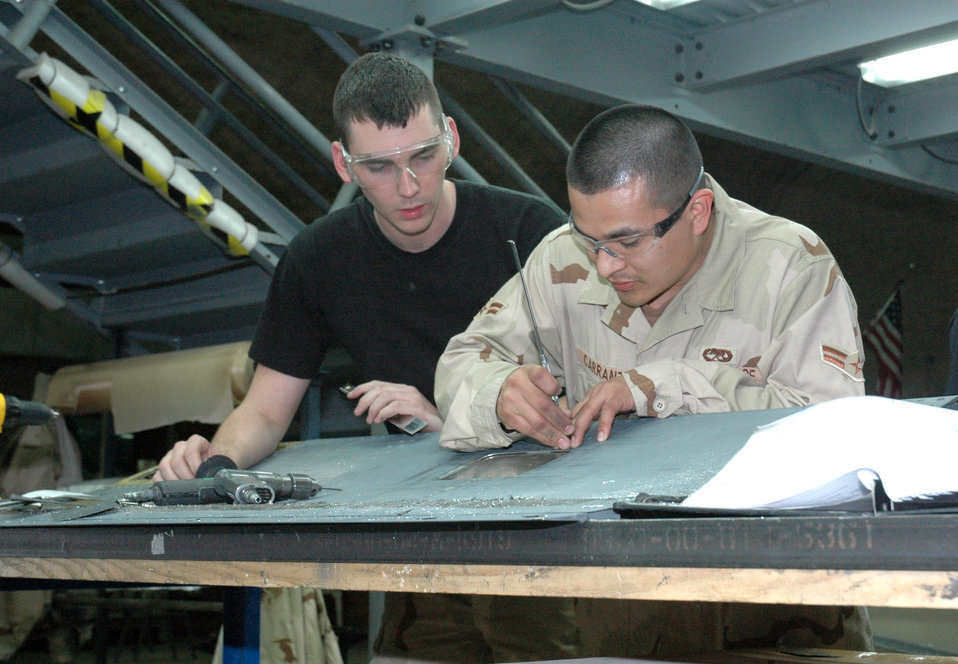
Airmen's customized parts keep planes in fight

Senior Airman Ryan VanArtsdalen (left) and Airman 1st Class Jaime Carranza repair a No. 2 spoiler from a KC-135 Stratotanker Feb. 20 in Southwest Asia. The Airmen are aircraft structural maintenance journeymen deployed with the 379th Expeditionary Maintenance Squadron.